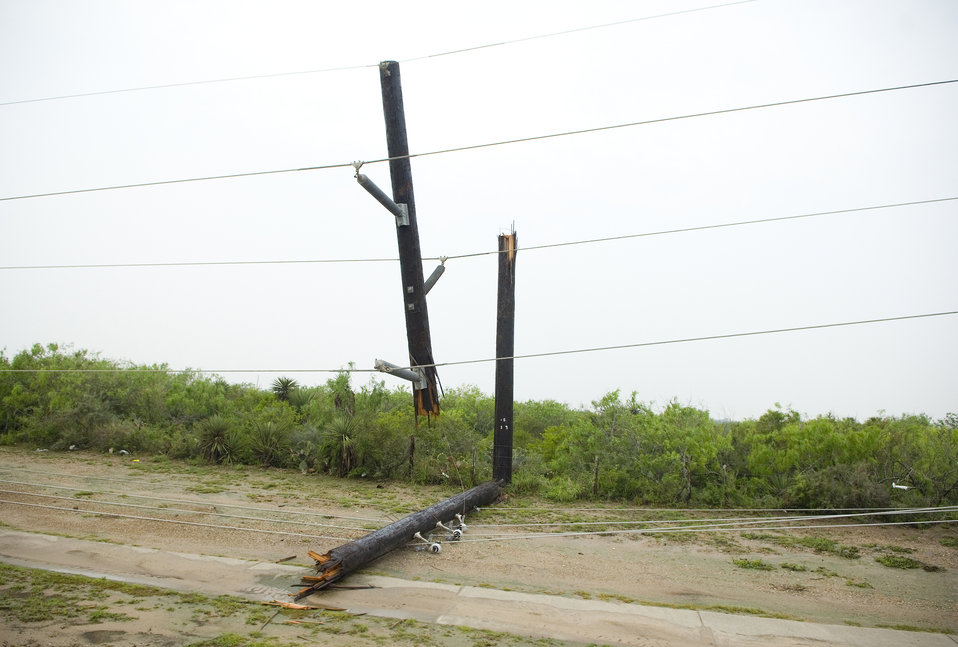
Hurricane Dolly

Power lines in South Padre Island, Texas, were snapped into thirds June 24 by the 100 mph winds created by Hurricane Dolly , leaving thousands without power.